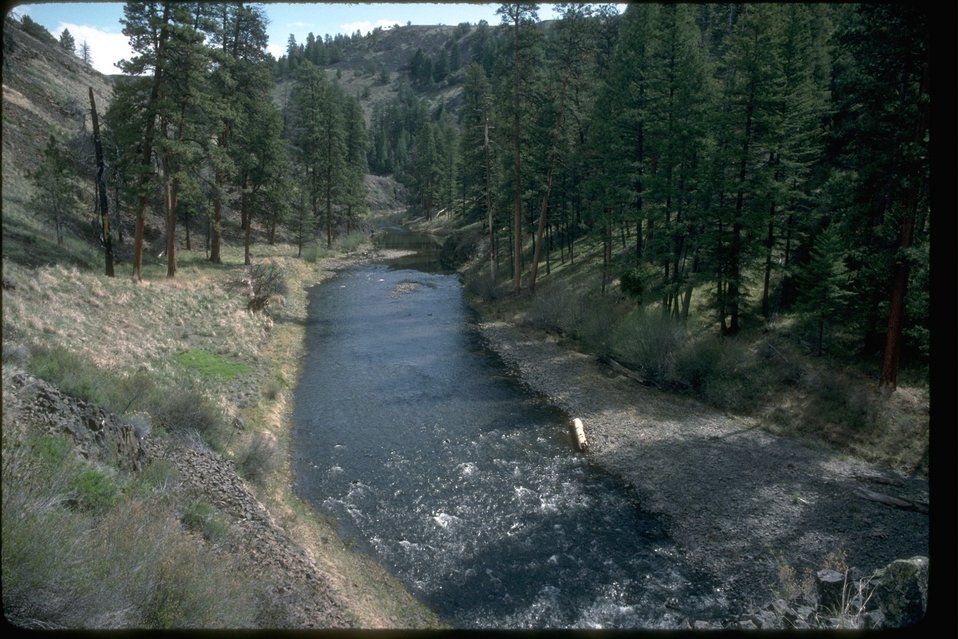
North Fork of the Crooked River. OR 5-31